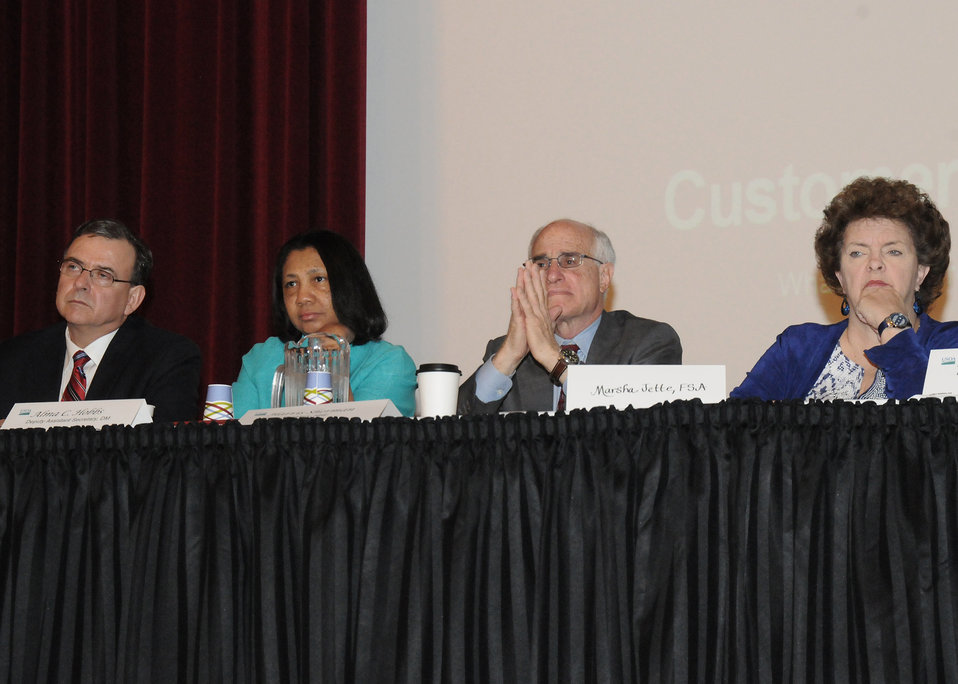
(L to R) Farm Service Agency State Executive Director Richard Burke, Deputy Assistant Secretary of Departmental Management Alma Hobbs, Under Secretary for Natural Resources and Environment Harris Sherman, and Farm Service Agency representative Marsha Jette listen to Agriculture employee’s opinions at the listening session on the Cultural Transformation of the United States Department of Agriculture (USDA). The session was held on the campus of the University of Massachusetts in Amherst, MA. on Wednesday, May 5, 2010. USDA photo 10di1342-54